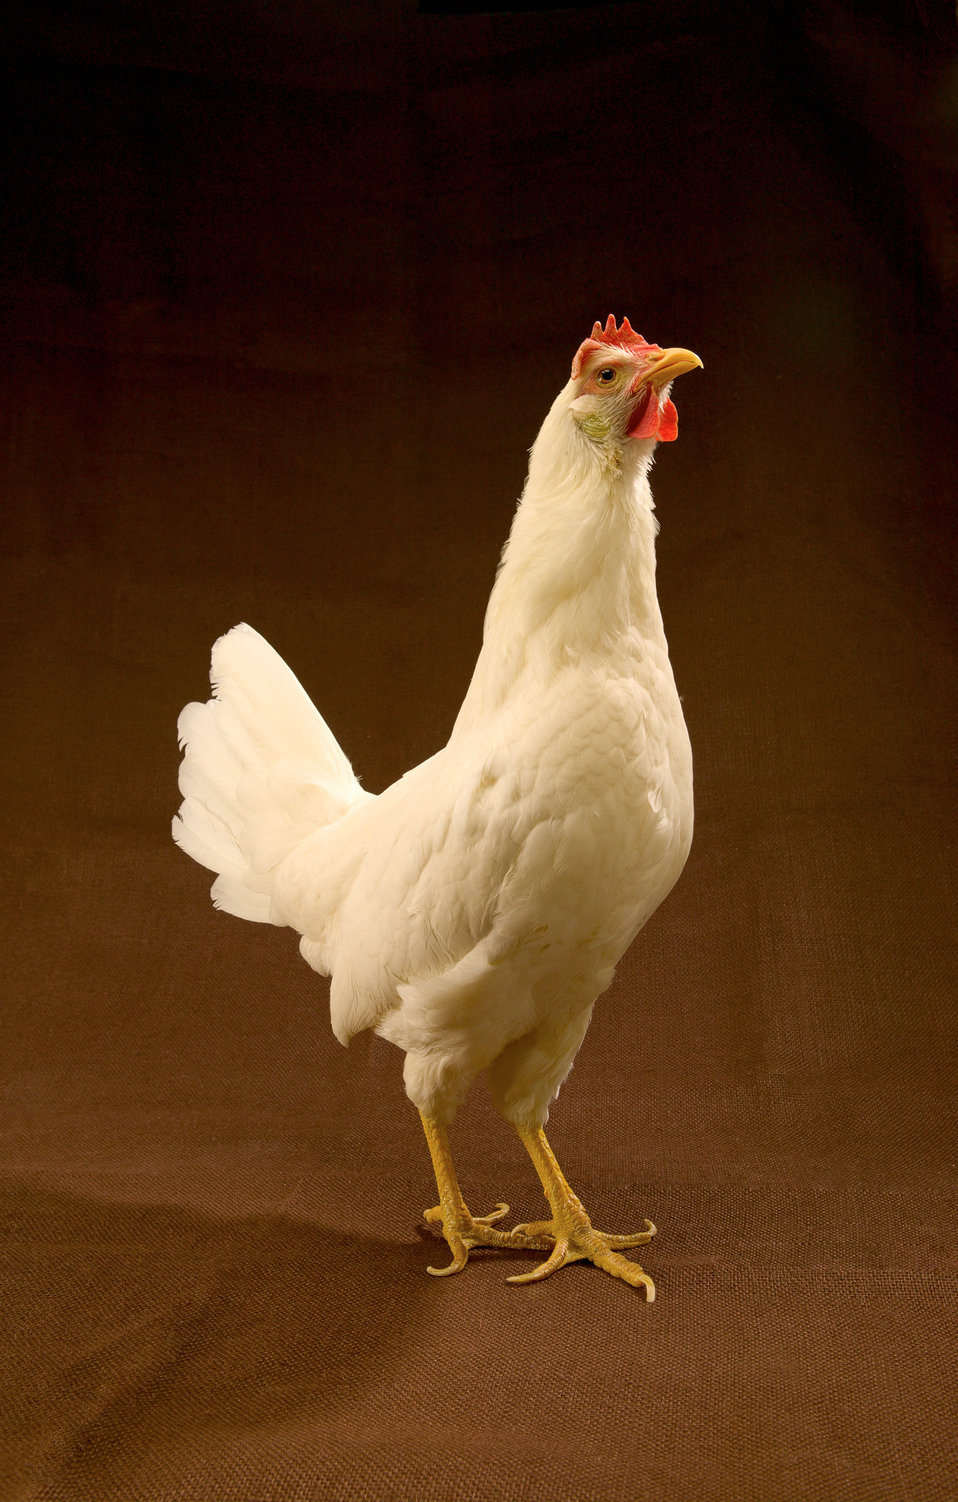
A White Leghorn chicken stands on a mat on Oct. 28, 2004. U. S. Department of Agriculture (USDA) Agricultural Research Service (ARS) geneticist Hans Cheng and colleagues at the USDA ARS Avian Disease and Oncology Laboratory used the DNA of the Red Jungle Fowl line combined with that of a White Leghorn chicken to create a genetic map of the chicken.